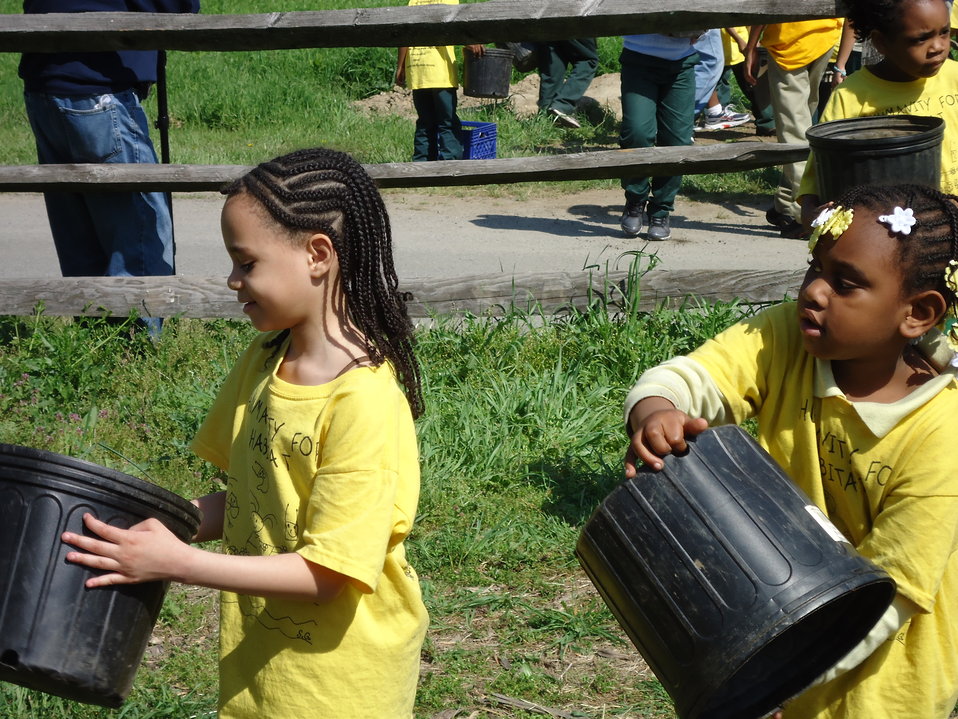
Pollinator garden (PA)

Children helping plant a pollinator garden at John Heinz NWR, Philadelphia, PA.